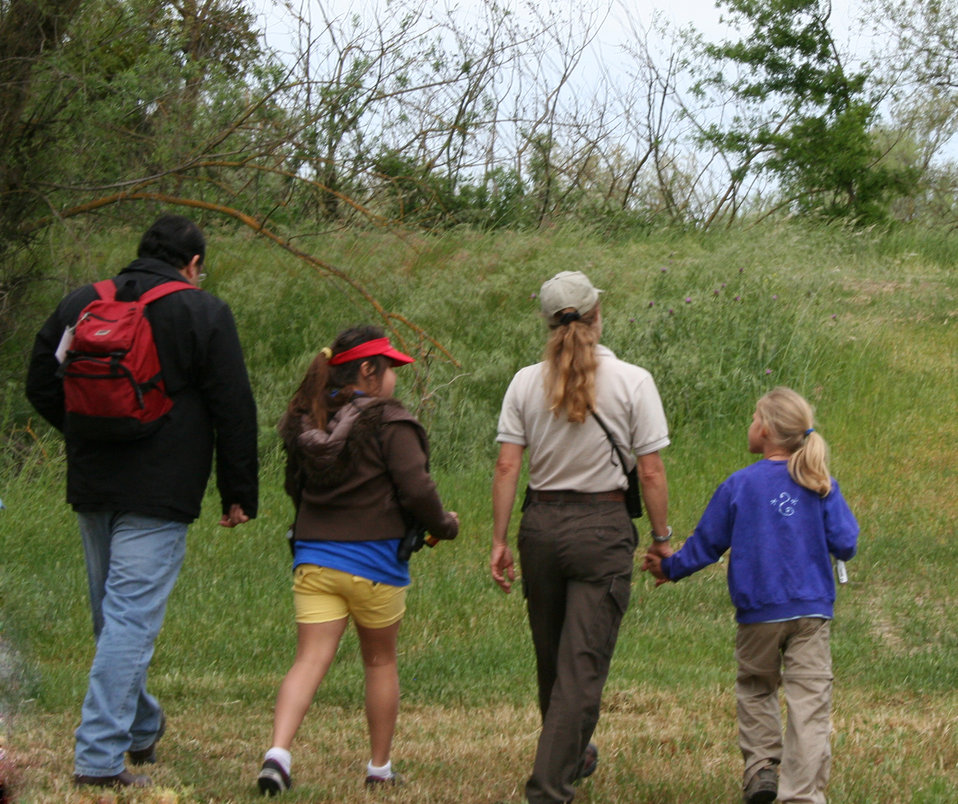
Stone Lakes National Wildlife Refuge